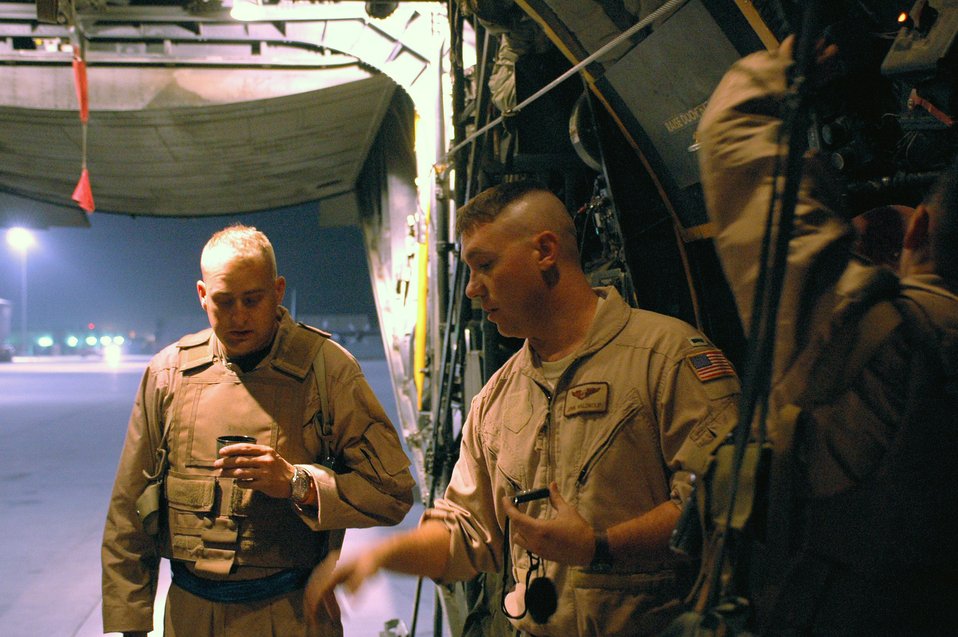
Airmen perform leaflet drop over Afghanistan

1st Lt. Jon Waldroup (right) discusses the leaflet drop mission details with Tech. Sgt. Kevin Letz in October at a base in Southwest Asia. The C-130 Hercules crew dropped 300,000 leaflets over an area of Afghanistan. Lieutenant Waldroup is a 40th Expeditionary Airlift Squadron navigator and Sergeant Letz is a 40th EAS loadmaster.